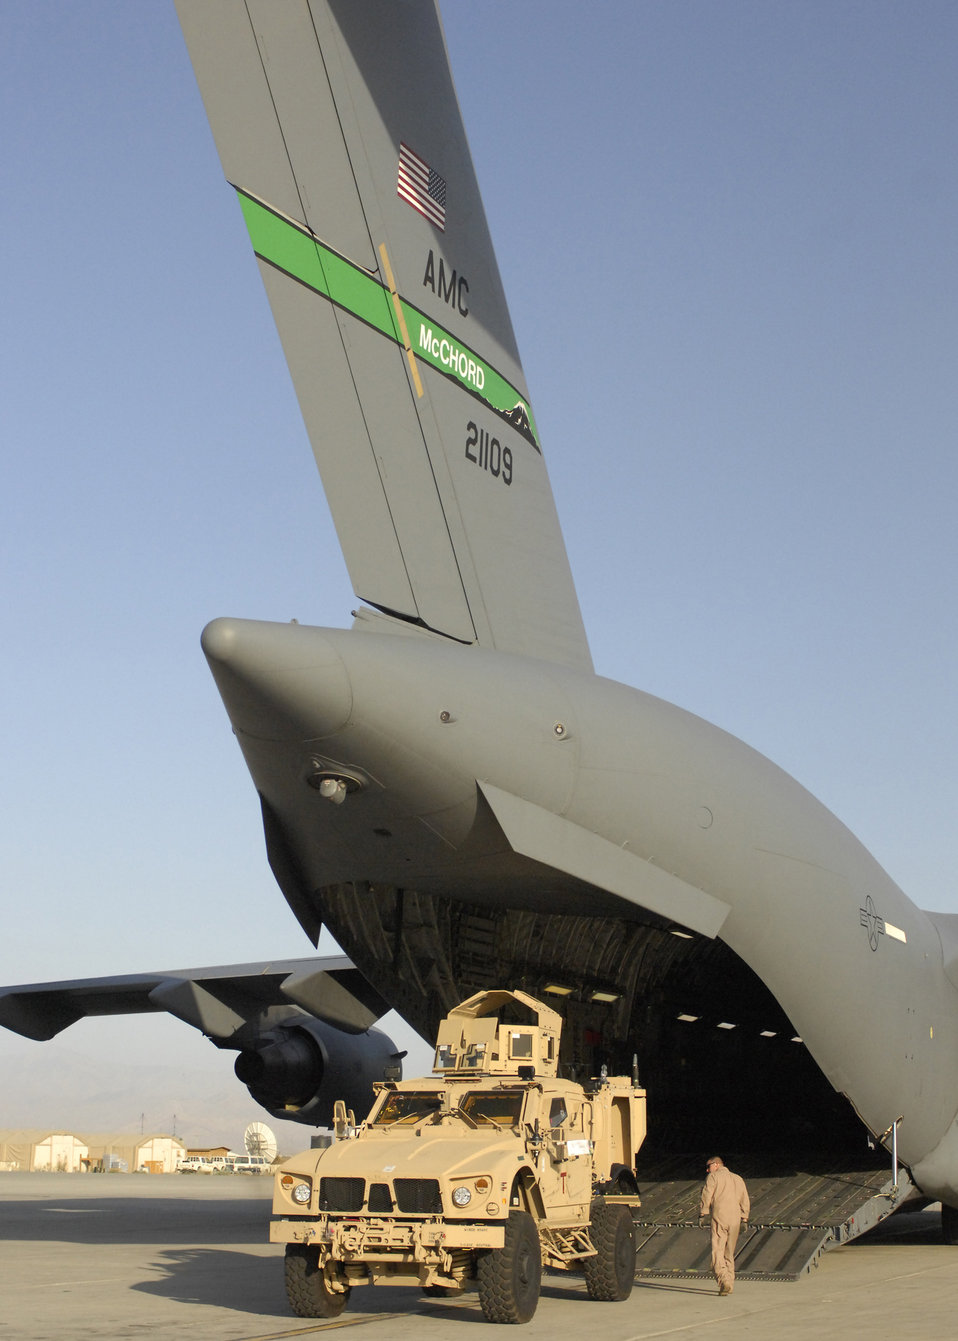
first M-ATVS arrive in Afghanistan

A C-17 Globemaster III loadmaster spots the driver of a mine-resistant, ambush-protected all-terrain Vehicle as he drives it off the aircraft at Bagram Airfield, Afghanistan, Oct. 1, 2009. The M-ATV's are the first of their kind in Afghanistan and support small-unit combat operations in highly restricted rural, mountainous and urban environments that include mounted patrols, reconnaissance, security, convoy protection, communications, command and control, and combat service support. Transporting M-ATVs aircraft can be accomplished in a day, where sealift would require approximately 26 days. An order for more than 6,600 of the M-ATVs are expected to be fielded during the next year.